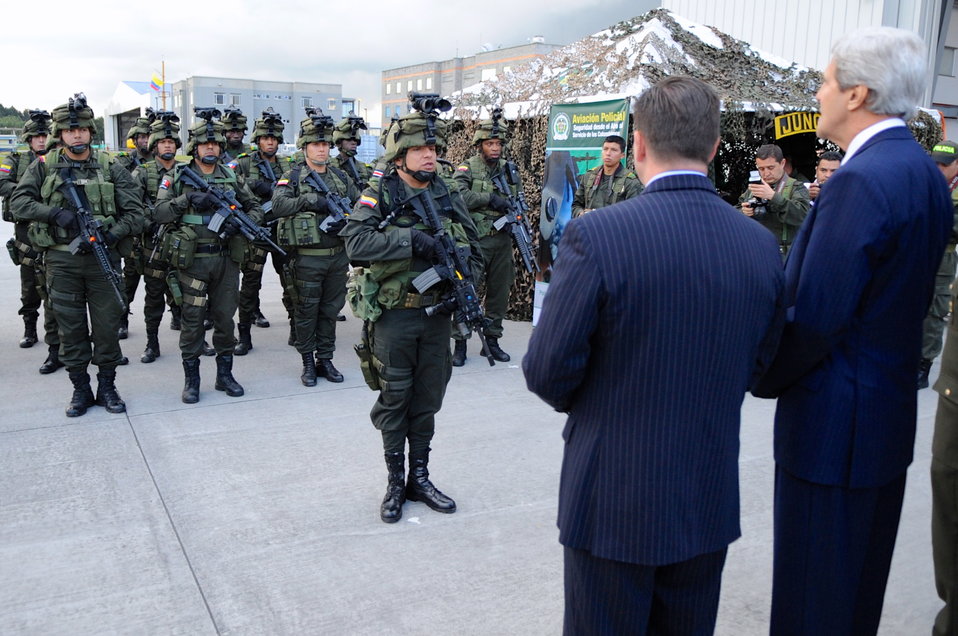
Secretary Kerry Meets With Colombian Troops

U.S. Secretary of State John Kerry meets members of a special forces team during a counter-narcotics tour in Bogota, Colombia, on August 12, 2013.